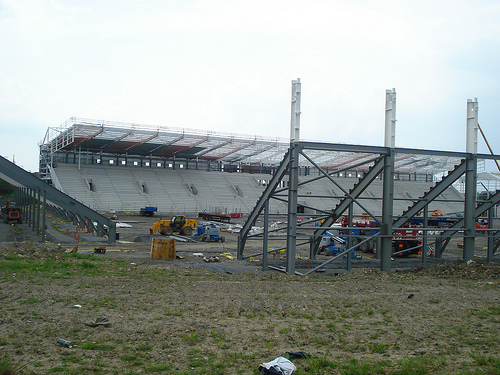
Progress of the New Pemberton Stadium